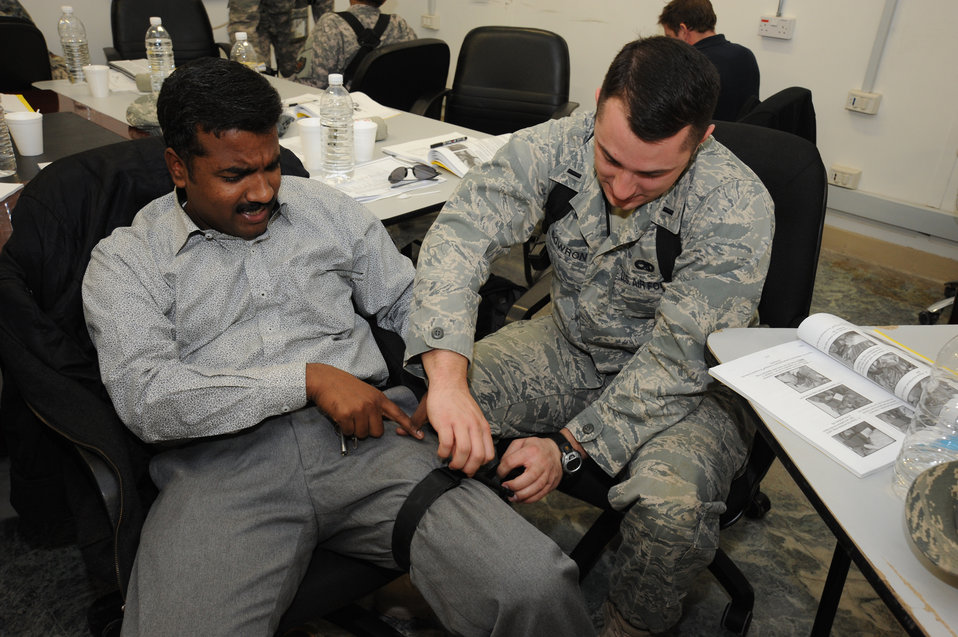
Air Force and Army jointly save lives

1st Lt. Micah Bowron practices applying a tourniquet on Sankar Shunmugasundaram during a combat lifesaver training course Dec. 29, 2009, at Baghdad, Iraq. Lieutenant Bowron is a heavy equipment procurement officer for U.S. Forces-Iraq, Deputy Commanding General-Advising and Training Health Affairs. Mr. Shunmugasundarama is a dining facility quality assurance and quality control manager for Almco.